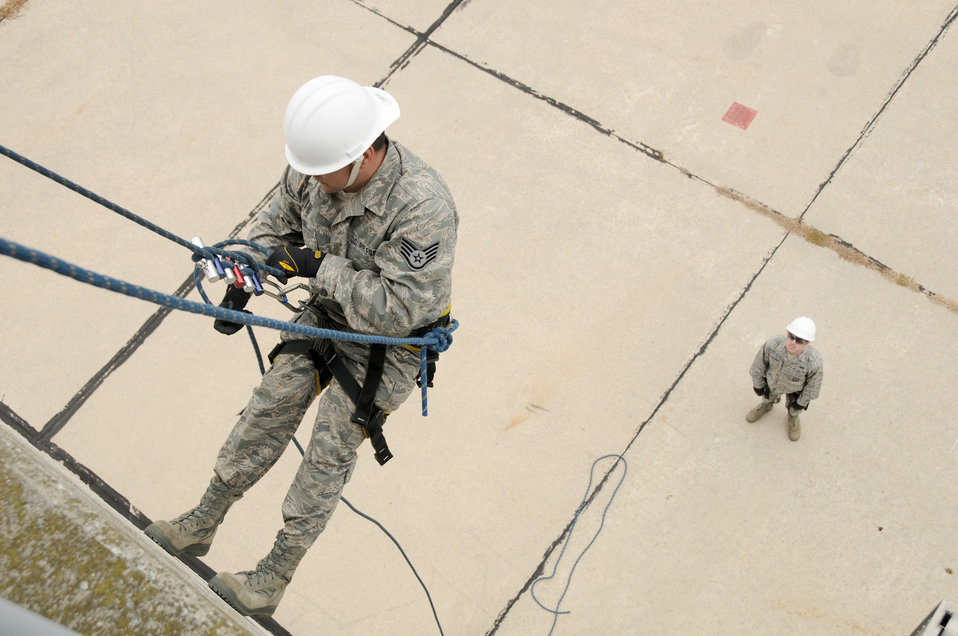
Firefighters on a training mission

Firefighters rappel down the side of a training facility Oct. 5, 2010, at the Toledo Fire and Rescue Department Training Academy in Ohio. The firefighters from the Ohio Air National Guard's 180th Fighter Wing are participating in six days of training to prepare them for various rescue situations.